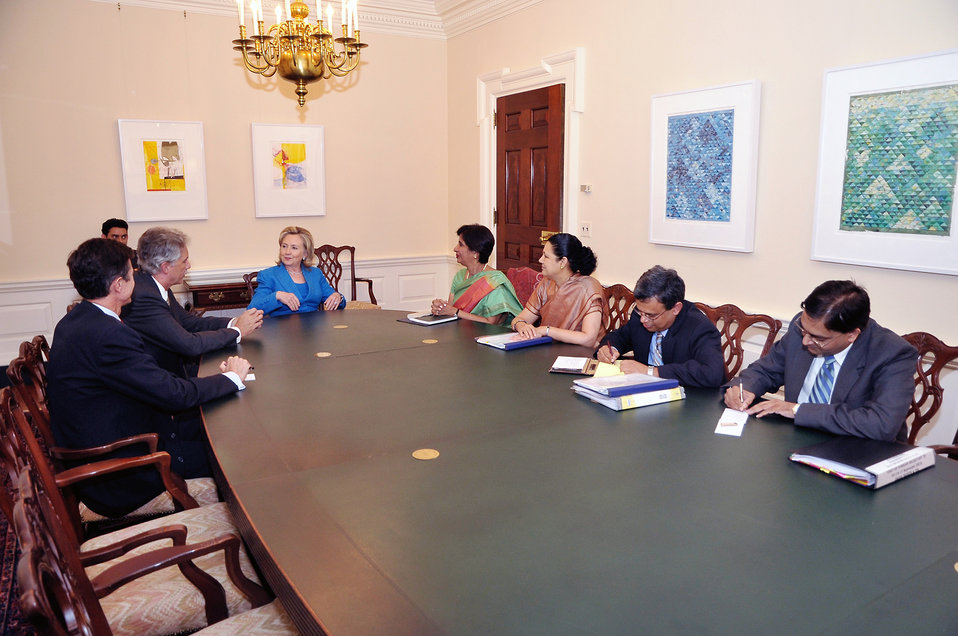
Secretary Clinton, Under Secretary Burns, and Assistant Secretary Blake Meet With Indian Foreign Secretary Rao

U.S. Secretary of State Hillary Rodham Clinton (center), U.S. Under Secretary of State for Political Affairs William J. Burns (second on the left), and U.S. Assistant Secretary of State for South and Central Asian Affairs Robert O. Blake (closest to the camera on the right) Indian Foreign Secretary Nirupama Rao at the U.S. Department of State in Washington, D.C., on September 17, 2010.